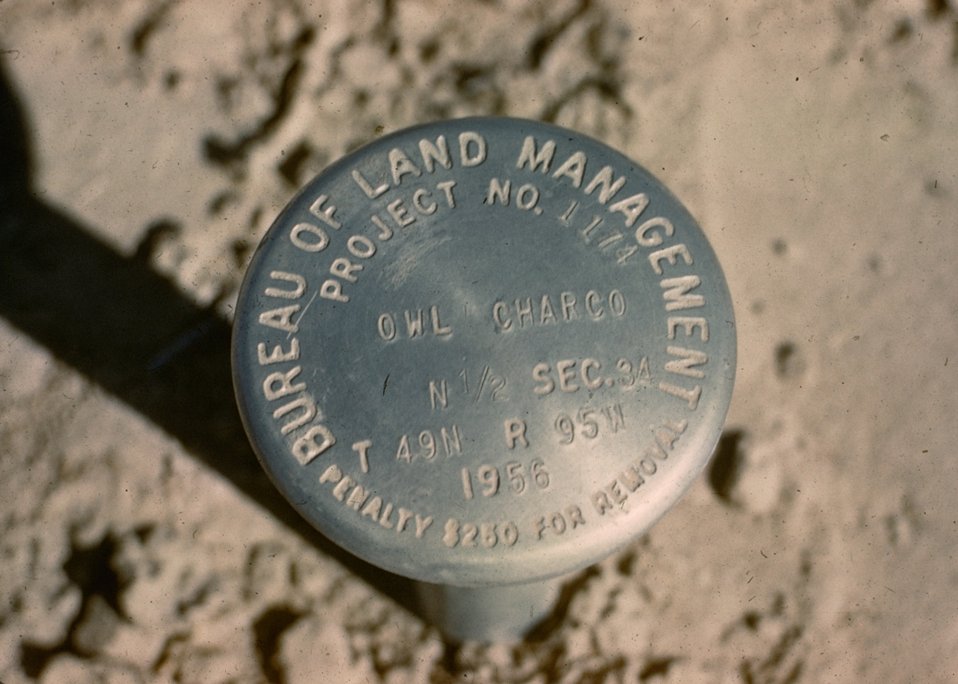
Bureau of Land Management project cap for Owl Charco Project.